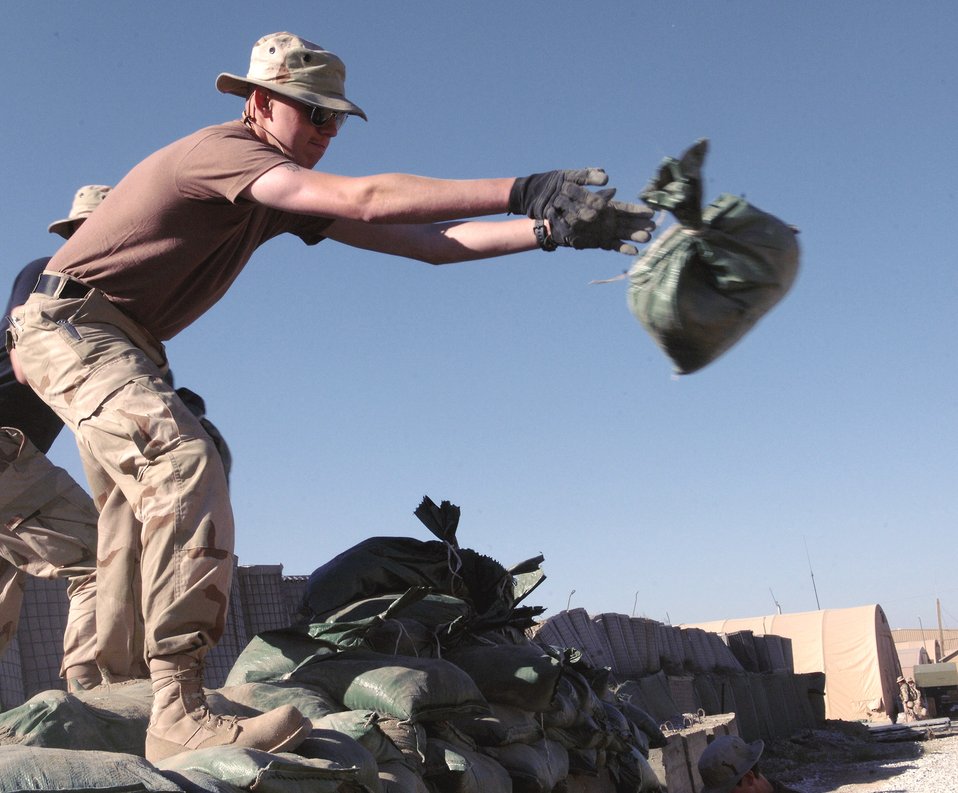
Airmen prepare Afghanistan camp for new living quarters

Airmen from the 455th Air Expeditionary Wing remove sandbags in preparation for an upgrade to the deployed Airmen's living quarters on Camp Cunningham May 22 at Bagram Airfield, Afghanistan. The existing B-Huts the Airmen currently reside in will be relocated to this area to make way for sturdier relocatable buildings. The upgrade is currently scheduled to begin with eight B-Huts.